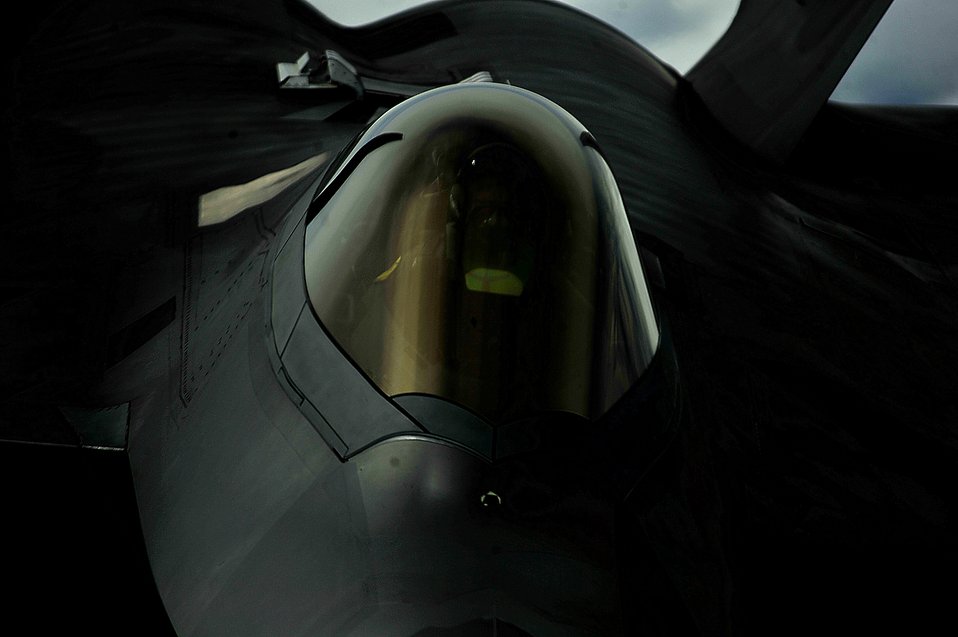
F-22 Raptor

A 1st Fighter Wing's F-22 Raptor from Joint Base Langley-Eustis, Va. pulls into position to accept fuel from a KC-135 Stratotanker with the 756th Air Refueling Squadron, Joint Base Andrews Naval Air Facility, Md. off the east coast on May 10, 2012. The first Raptor assigned to the Wing arrived Jan. 7, 2005. This aircraft was allocated as a trainer, and was docked in a hanger for maintenance personnel to familiarize themselves with its complex systems. The second Raptor, designated for flying operations, arrived Jan. 18, 2005. On Dec. 15, 2005, Air Combat Command commander, along with the 1 FW commander, announced the 27th Fighter Squadron as fully operational capable to fly, fight and win with the F-22. (U.S. Air Force Photo by: Master Sgt. Jeremy Lock)